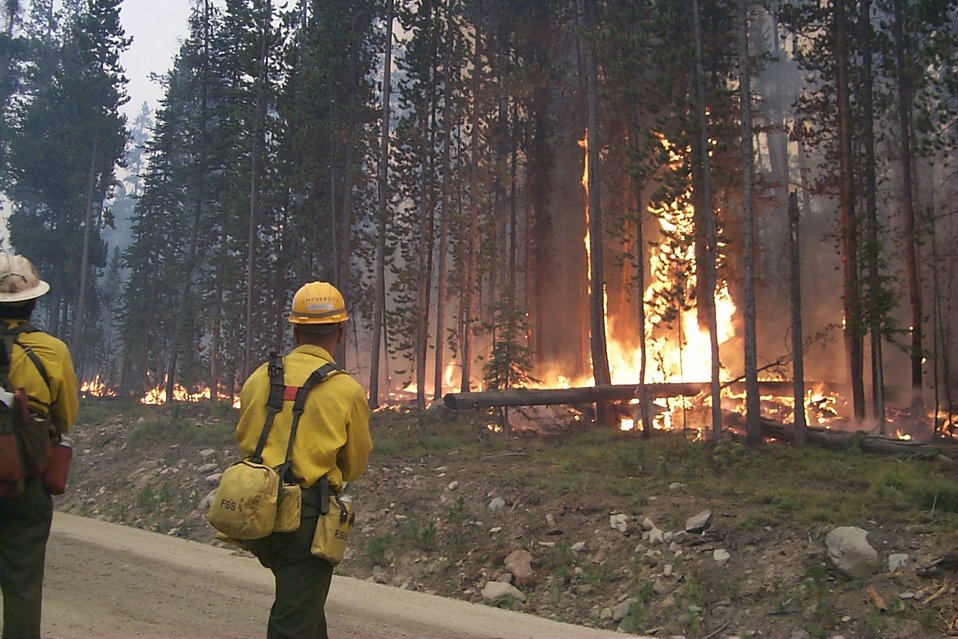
Fire fighters holding line Fire Clearwater Fire Salmon Field Office USRD Upper Snake River District